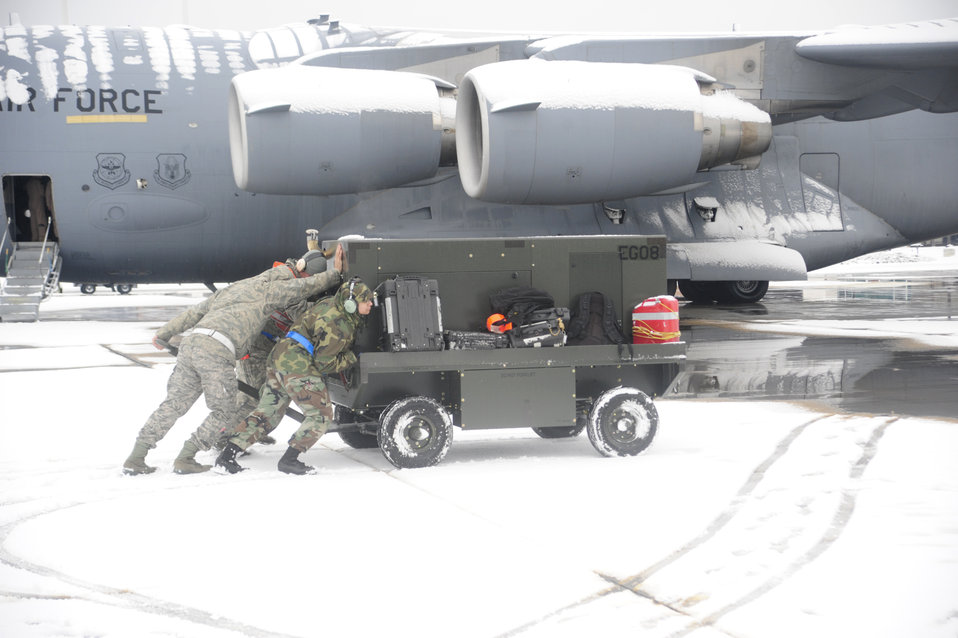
Snow sorties

Airmen move a generator into position while servicing a C-17 Globemaster III before a mission Nov. 22, 2010, at Joint Base Lewis-McChord, Wash. More than two inches of snow fell on McChord Field. The Airmen are from the 62nd Aircraft Maintenance Squadron.